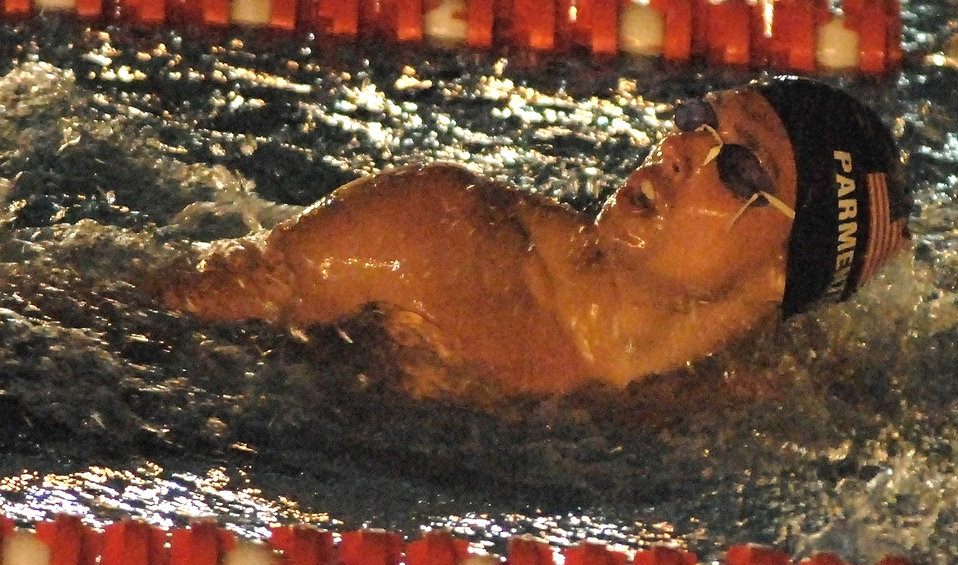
Americans compete in Military World Games

Second Lt. Paul Parmenter swims in the 200-meter individual medley race during the Military World Games competition Oct. 15 in Hyderabad, India. He placed fifth in the event. The Conseil Internationale du Sport Militaire's Military World Games event is the largest international military Olympic-style event in the world. In this year's fourth edition of the Games, 103 countries and more than 5,000 athletes are scheduled to compete Oct. 14 through 21 in boxing, diving, soccer, handball, judo, military pentathlon, parachuting, sailing, shooting, swimming, volleyball and track and field. The purpose of the Military World Games is to promote friendship through sport.